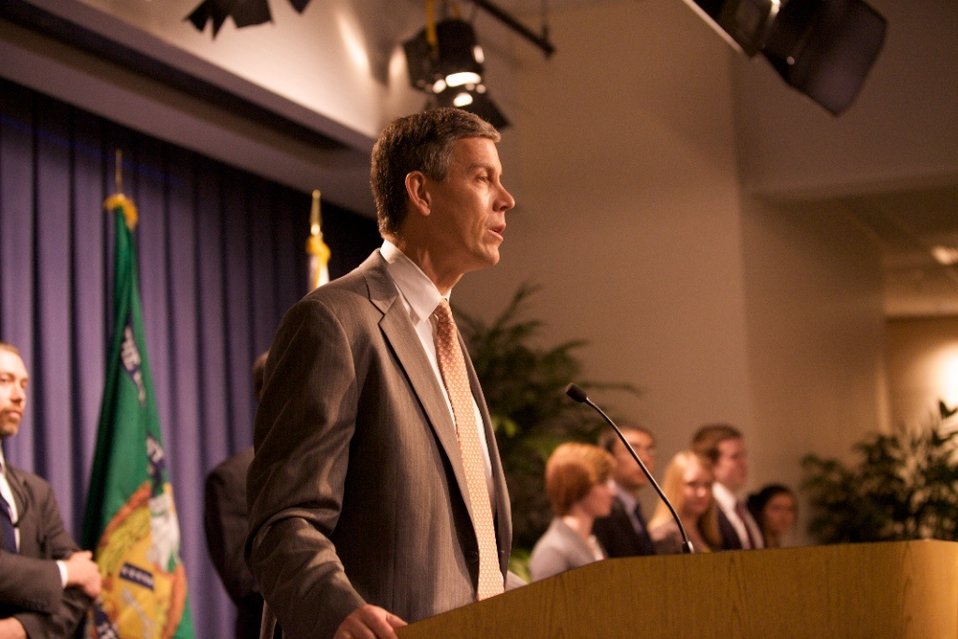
Education, Treasury Recognize High-Scoring Students in the 2010-11 National Financial Capability Challenge

Secretary of Education Arne Duncan speaking at an event recognizing high-scoring students on this year's National Financial Capability Challenge.